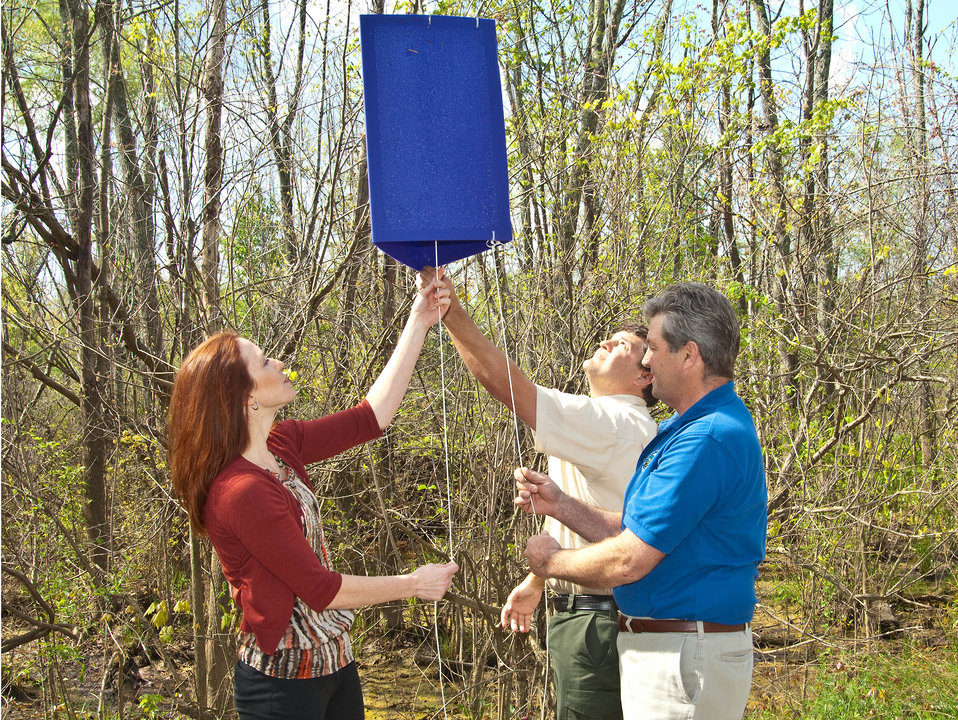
Agriculture Deputy Under Secretary for Marketing and Regulatory Programs Rebecca Blue, Plant Health Safeguarding Specialist Joseph Vulovich and Maryland Agriculture Secretary Bubby Hance hang one of the first emerald ash borer (EAB) survey traps for the season in the trees at the Patuxent Wetlands Park in Anne Arundel County, MD, on Tuesday, April 10, 2012. These large, purple traps are used to identify and track EAB and assist officials in developing strategies to help prevent the spread of this invasive, ash-killing beetle.